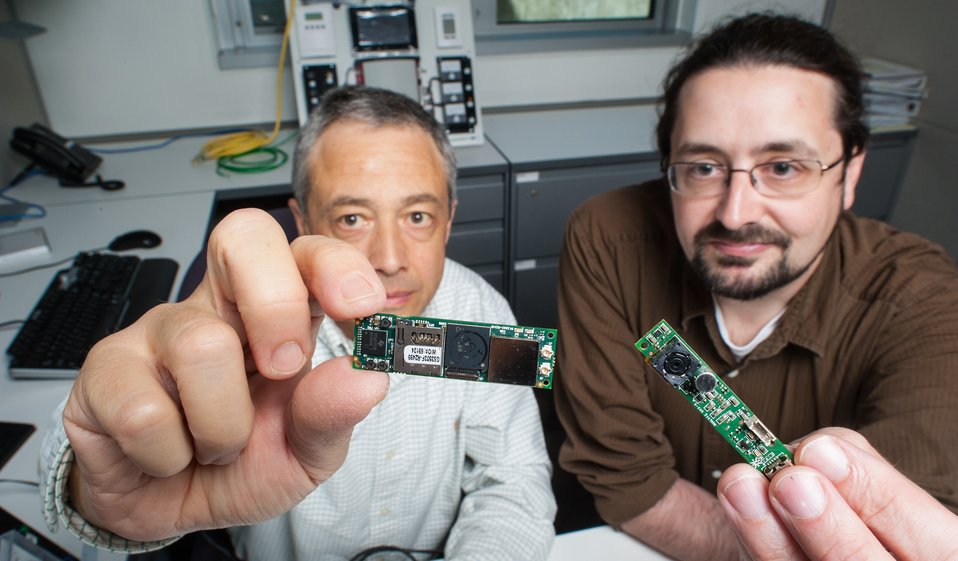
National Renewable Energy Laboratory researchers hold the processor and camera that make up the Image Processing Occupancy Sensor (IPOS).

The sensor is based on commercially available embedded hardware widely used by the smart phones industry, leverages mature open-source computer vision software libraries, and uses modern software engineering techniques and firmware development technologies. The IPOS used a synergistic approach with face and people detection through computer vision algorithms.